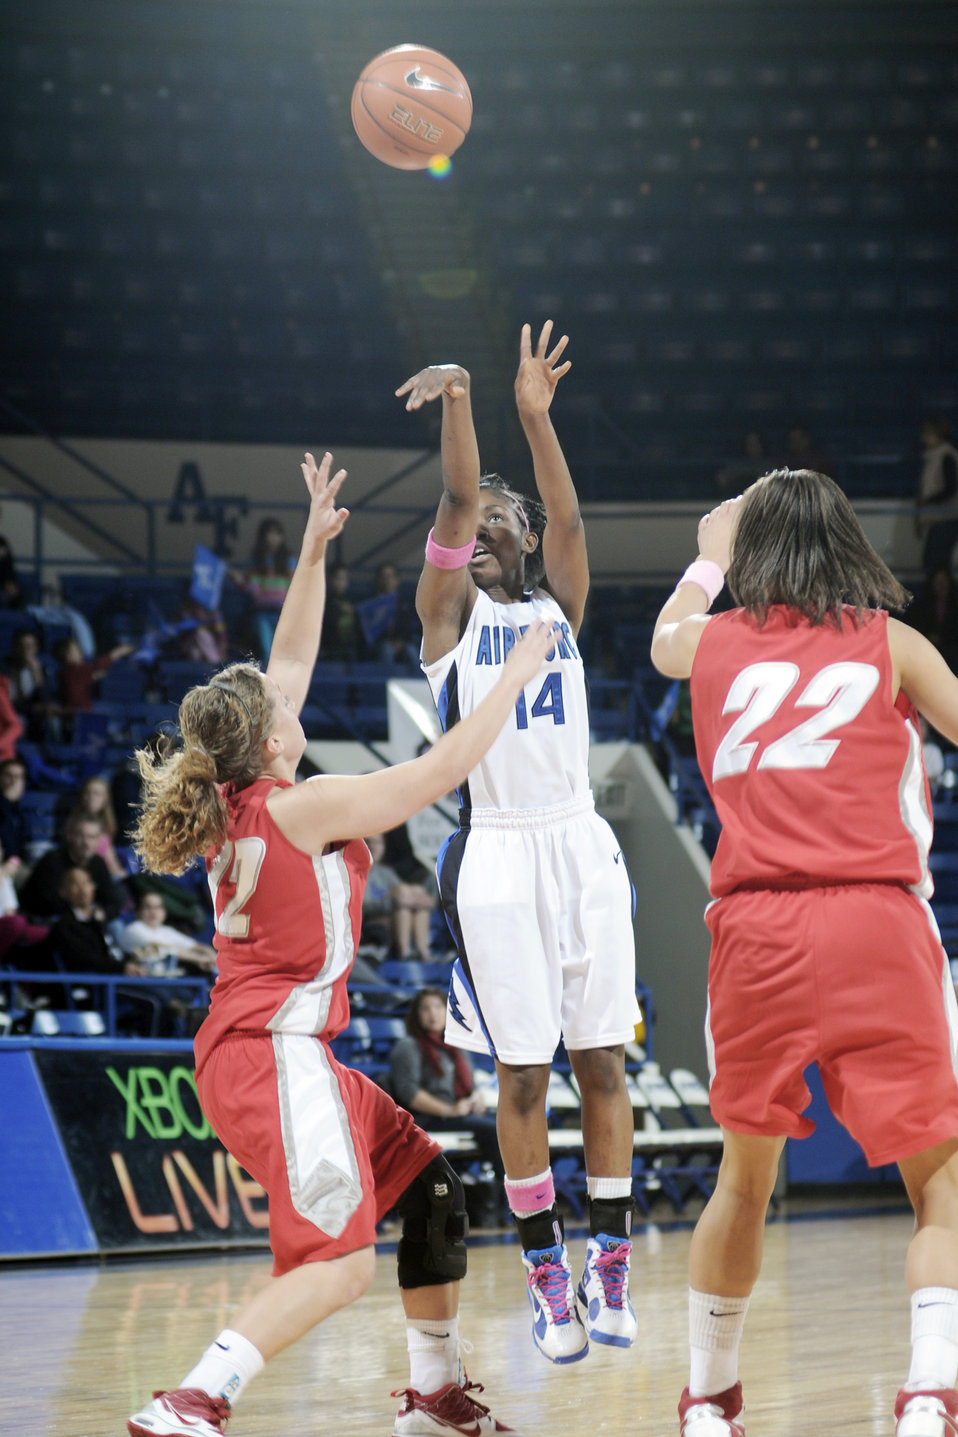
Photo essay: Academy women?s basketball falls to New Mexico

U.S. Air Force Academy freshman guard Desiree Wilson goes up for a jumper against the University of New Mexico Feb. 20, 2010, at Clune Arena in Colorado Springs, Colo. The Falcons lost 65-46.